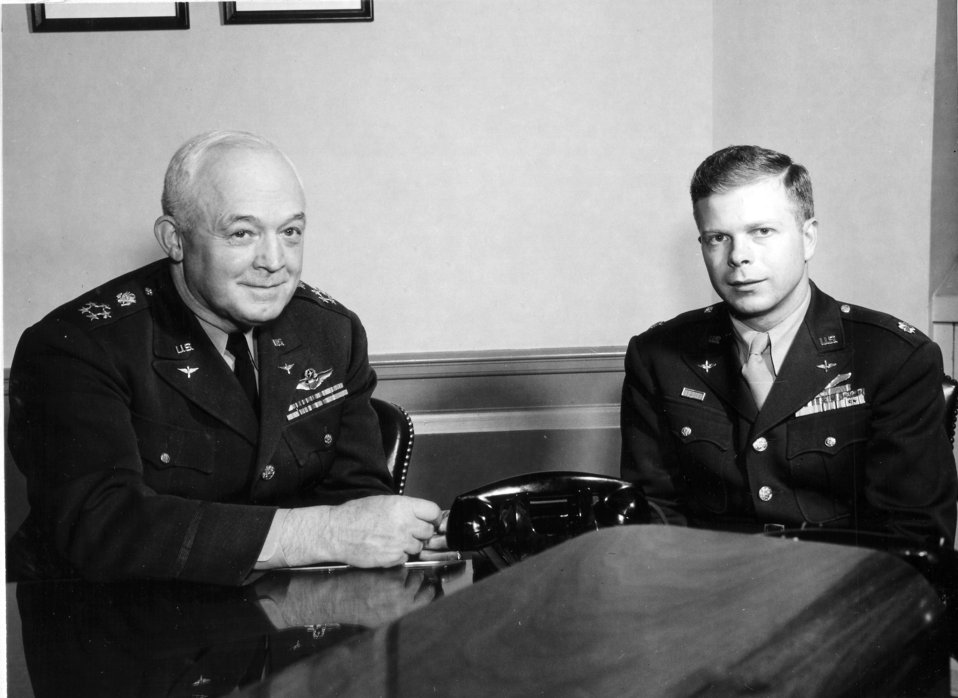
Hap Arnold and Dick Bong

1940's -- Hap Arnold and Dick Bong